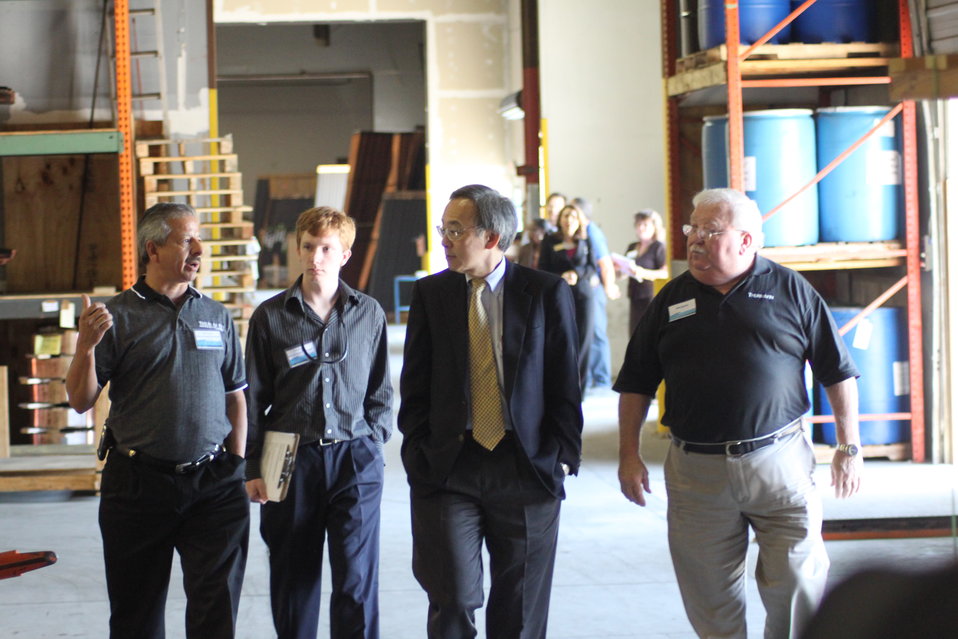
Norm 020